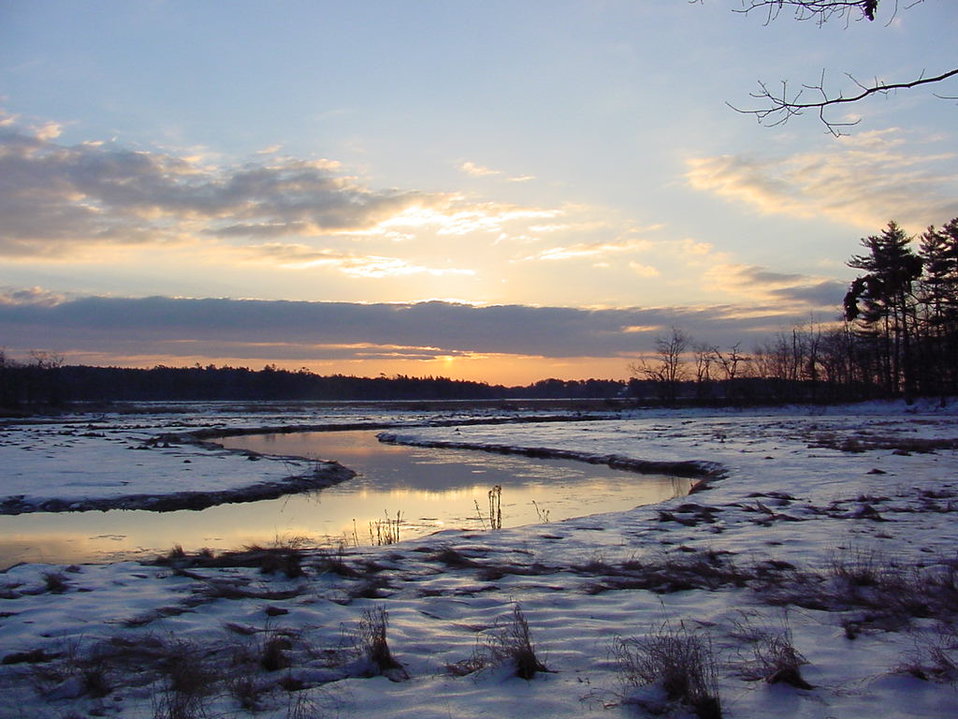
Rachel Carson National Wildlife Refuge Trail at Sunrise

Sunrise from trail at Rachel Carson National Wildlife Refuge